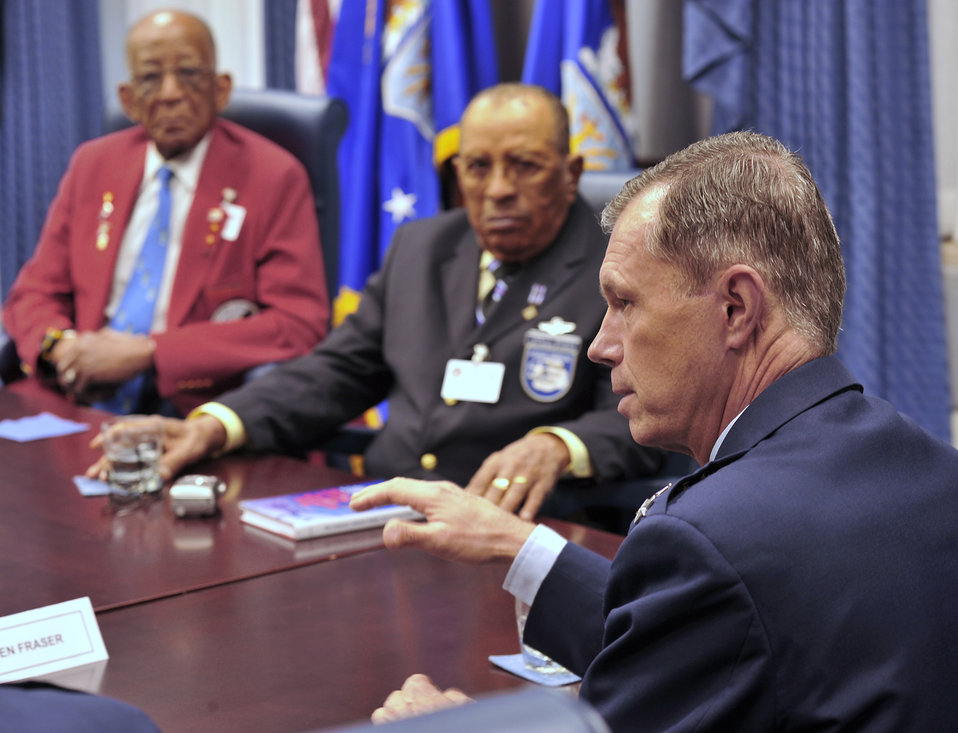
Tuskegee Airmen visit Pentagon

Air Force Vice Chief of Staff Gen. William Fraser III (right) talks with Tuskegee Airmen including James C. Warren and Phillip Broome in the Pentagon April 20. Four Tuskegee Airmen and retired Lt. Gen. Russell Davis were in Washington to meet with General Fraser and Air Force Chief of Staff Gen. Norton Schwartz prior to departing on a tour of units in Southwest Asia including the 332nd Air Expeditionary Wing whose origins trace back to the 332nd Fighter Group and the Tuskegee Red Tail Flyers.